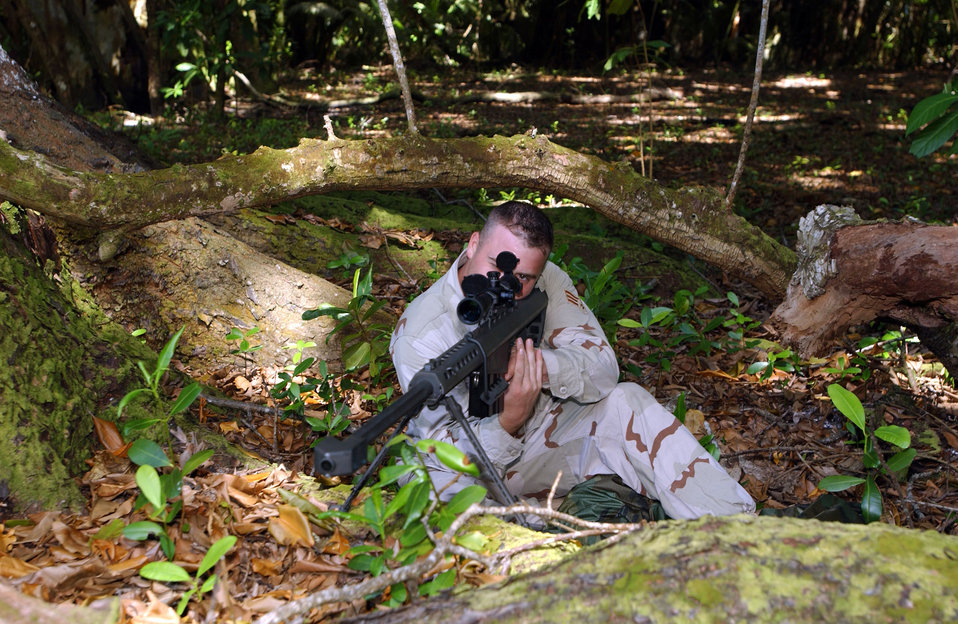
Aim

OPERATION ENDURING FREEDOM -- Senior Airman Peter Allen takes aim during an exercise at a forward deployed location in the British Indian Ocean Territory. Airman Allen is deployed from the Kansas Air National Guard and assigned to the 40th Expeditionary Security Forces Flight.